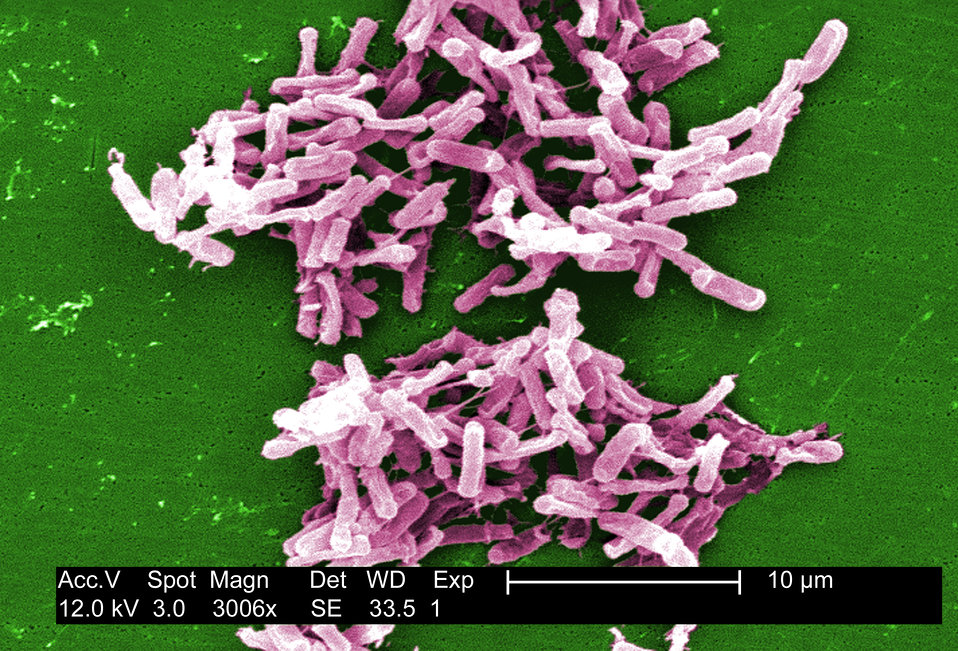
This micrograph depicts Gram-positive C. difficile bacteria from a stool sample culture obtained using a .1�m filter. See PHIL 6260 for a black and white version of this image.